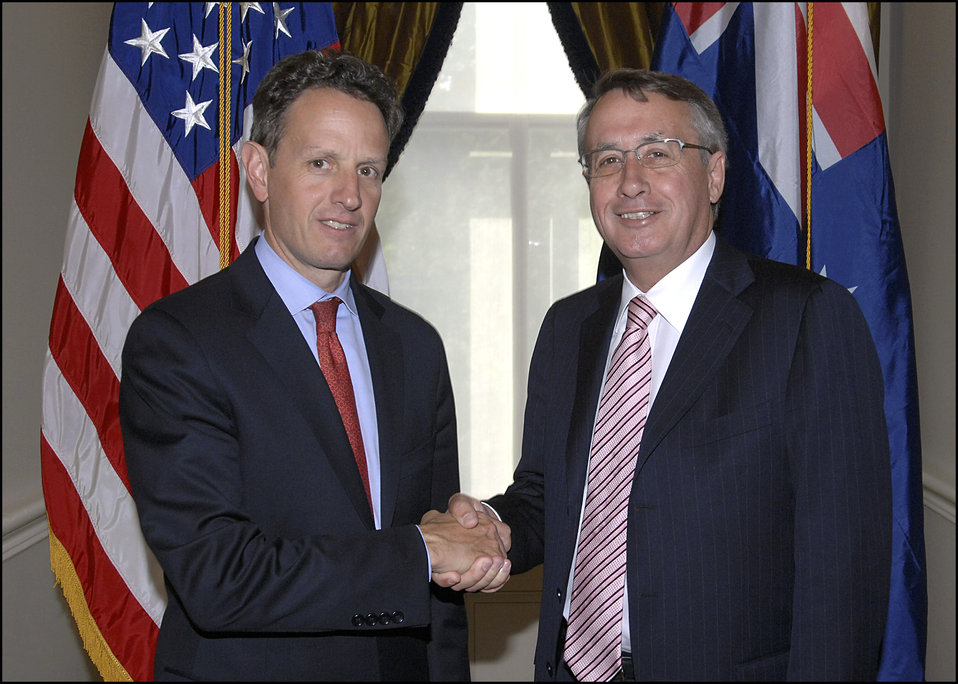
Australian Treasurer Wayne Swan

On September 23, 2009, Secretary Geithner met with the Australian Treasurer Wayne Swan.